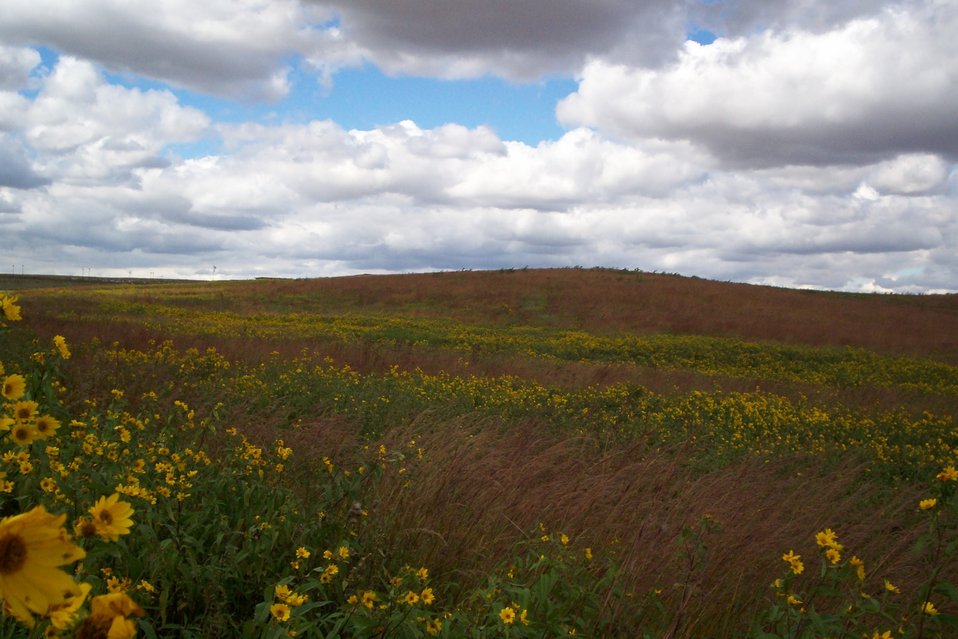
Prairie vista, Neal Smith Refuge

A unit of tallgrass prairie reconstructed from farmland shows its colors in early September on Neal Smith National Wildlife Refuge in Iowa.